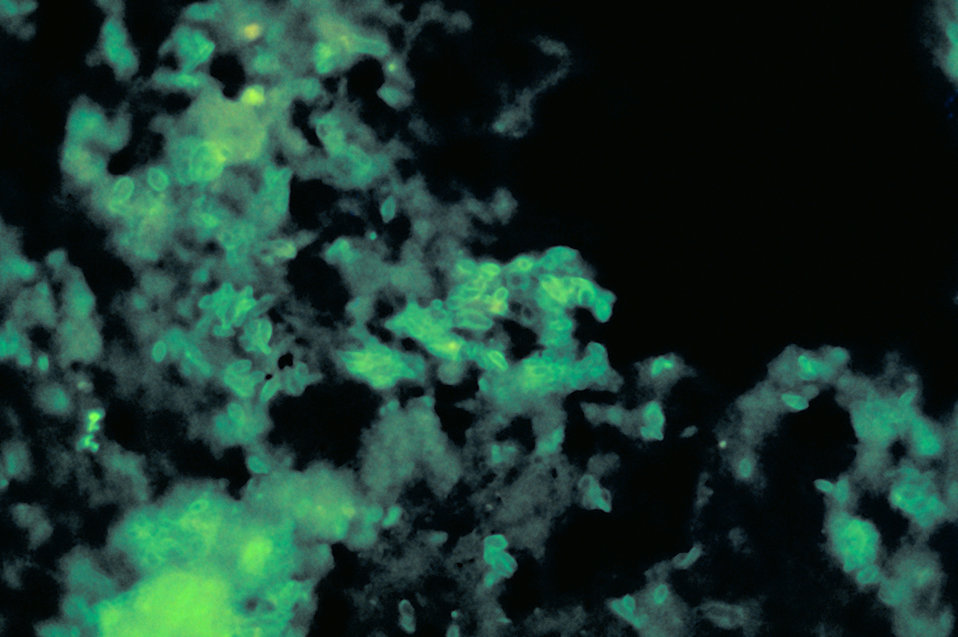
Using a direct FA stain, this slide demonstrates the histopathology of sporotrichosis due to Sporothrix schenckii.